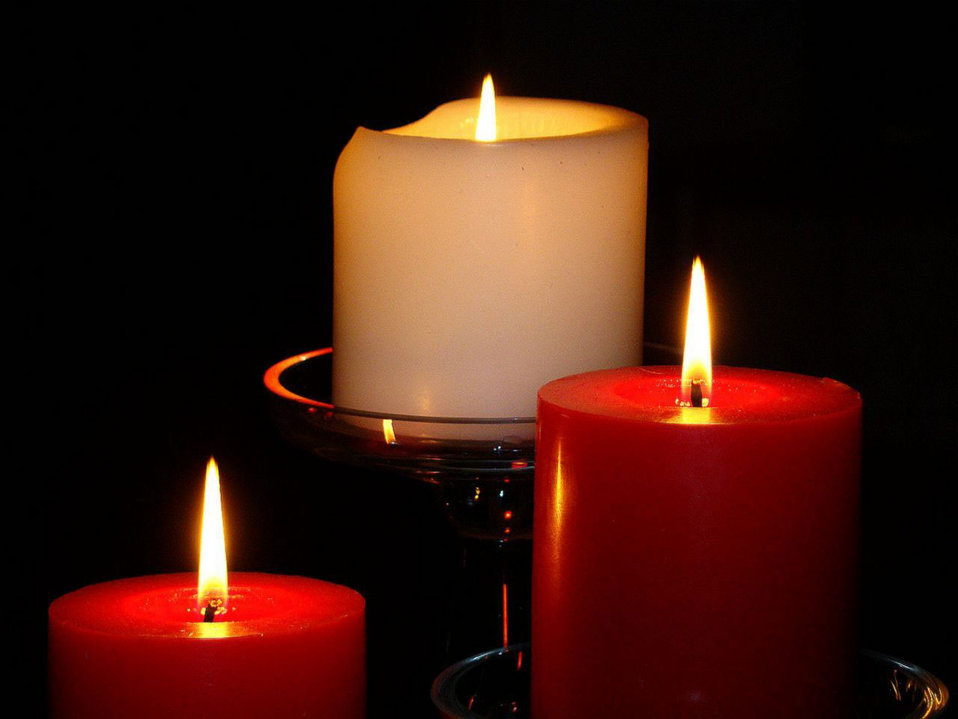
Candles

Red and white candles.